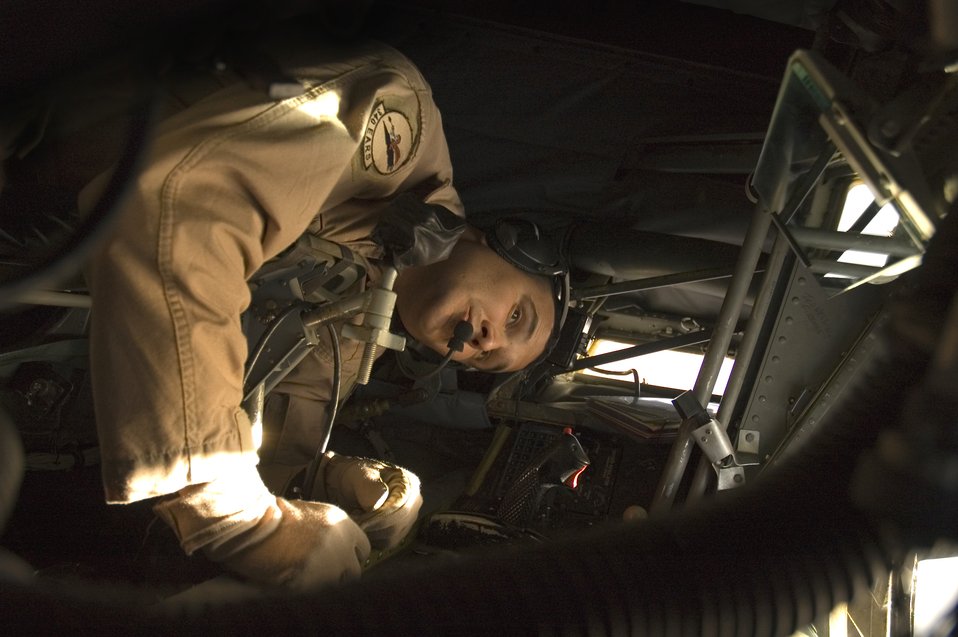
Air refueling squadron takes flight to fuel the fight

Staff Sgt. Anthony Krisher uses the mirrors in the boom pod of a KC-135R Stratotanker to check the air refueling boom before he refuels F-15E Strike Eagles over Iraq on Tuesday, April 18, 2006. Sergeant Krisher is a boom operator with the 340th Expeditionary Air Refueling Squadron. He is deployed from the 434th Air Refueling Wing at Grissom Air Reserve Base, Ind.